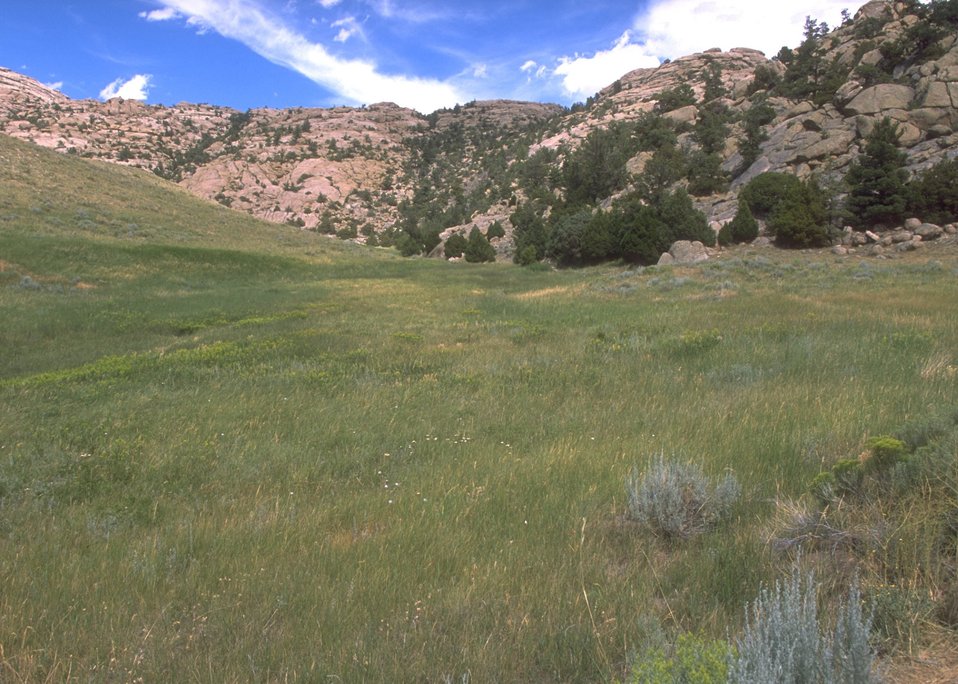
Martin's Cove area, Rawlins Field Office.